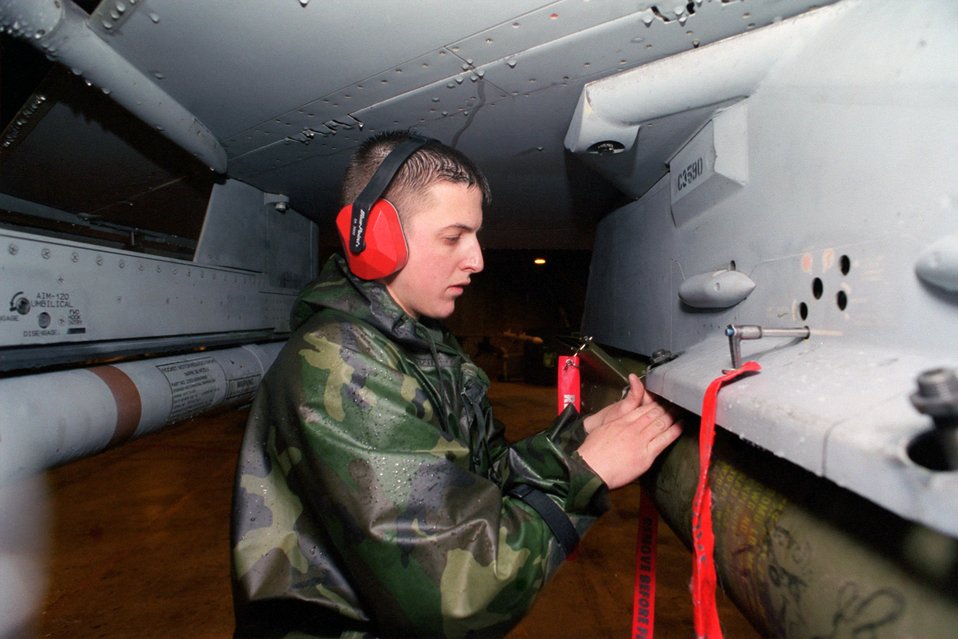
Operation Allied Force

A weapons technician prepares an F-16 Fighting Falcon at Aviano Air Base, Italy, for the next sortie in support of NATO Operation Allied Force, March 27, 1999.